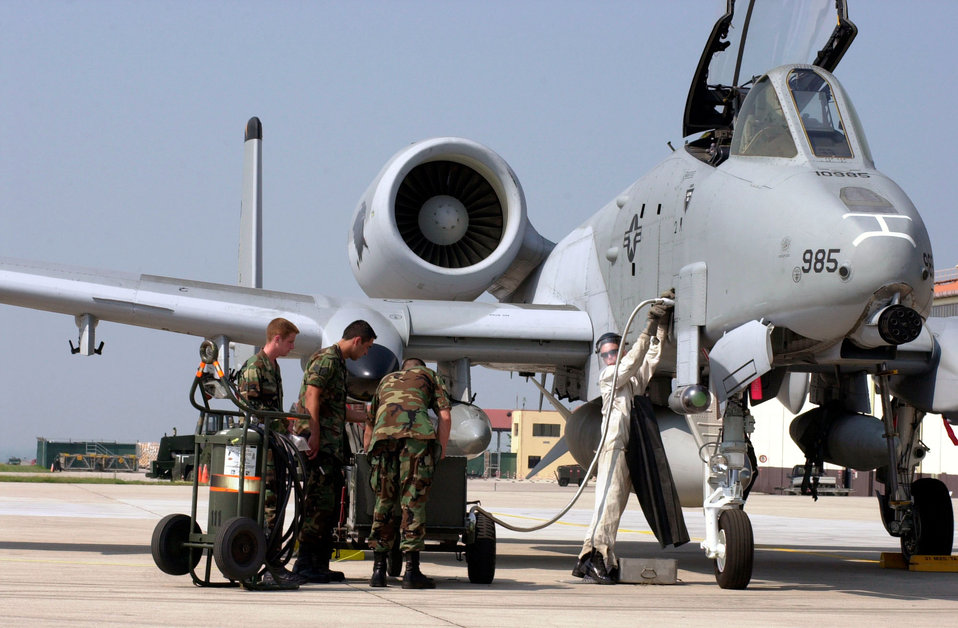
Need some air?

AVIANO AIR BASE, Italy -- Members of transient alert, 31st Maintenance Squadron service the liquid oxygen on an A-10 Tunderbolt II during a layover here, June 10, 2003. Liquid oxygen is loaded onto the aircraft and converted into a gaseous form to provide pure oxygen to pilots during flight.